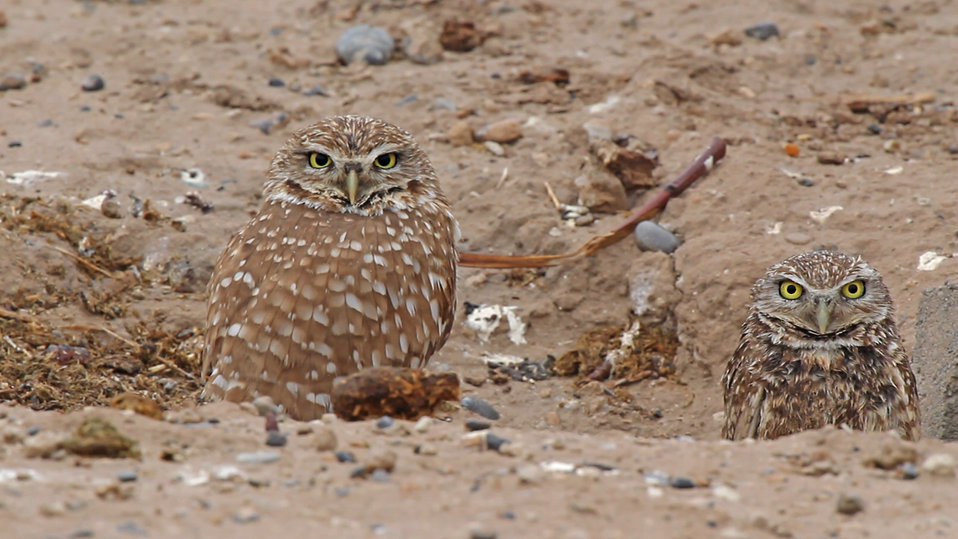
Burrowing Owl Pair

Partners for Fish and Wildlife Program restoration project in Las Vegas, completed in partnership with Red Rock Audubon.